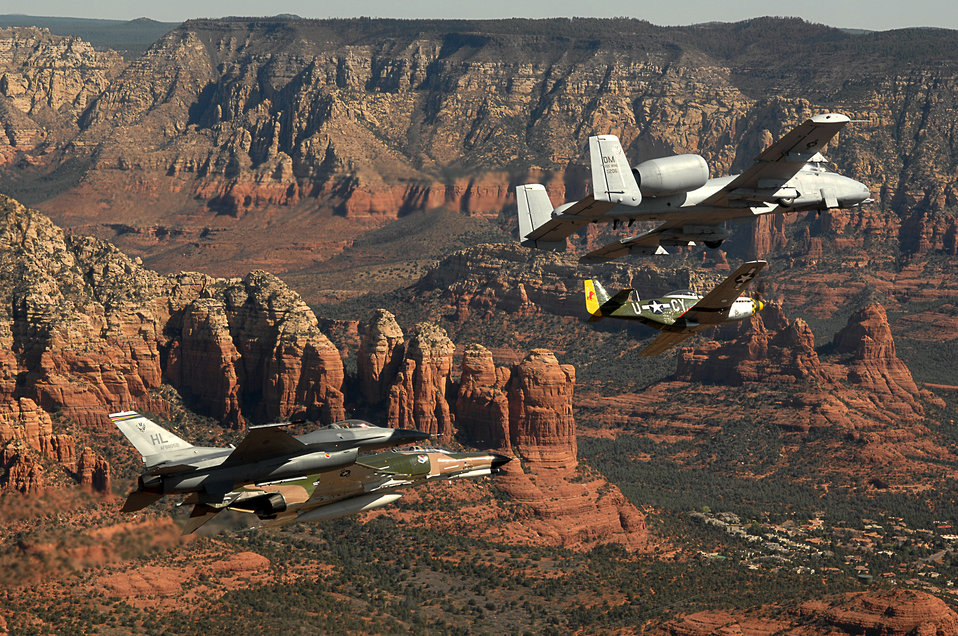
Planes of past and present soar over Sedona

An Air Force heritage flight consisting of a P-51 Mustang, an F-4 Phantom, an A-10 Thunderbolt and an F-16 Fighting Falcon fly over the Arizona desert on March 19 above Sadona. The flight was part of the events taking place in Phoenix for the first Air Force Week celebration of the year.